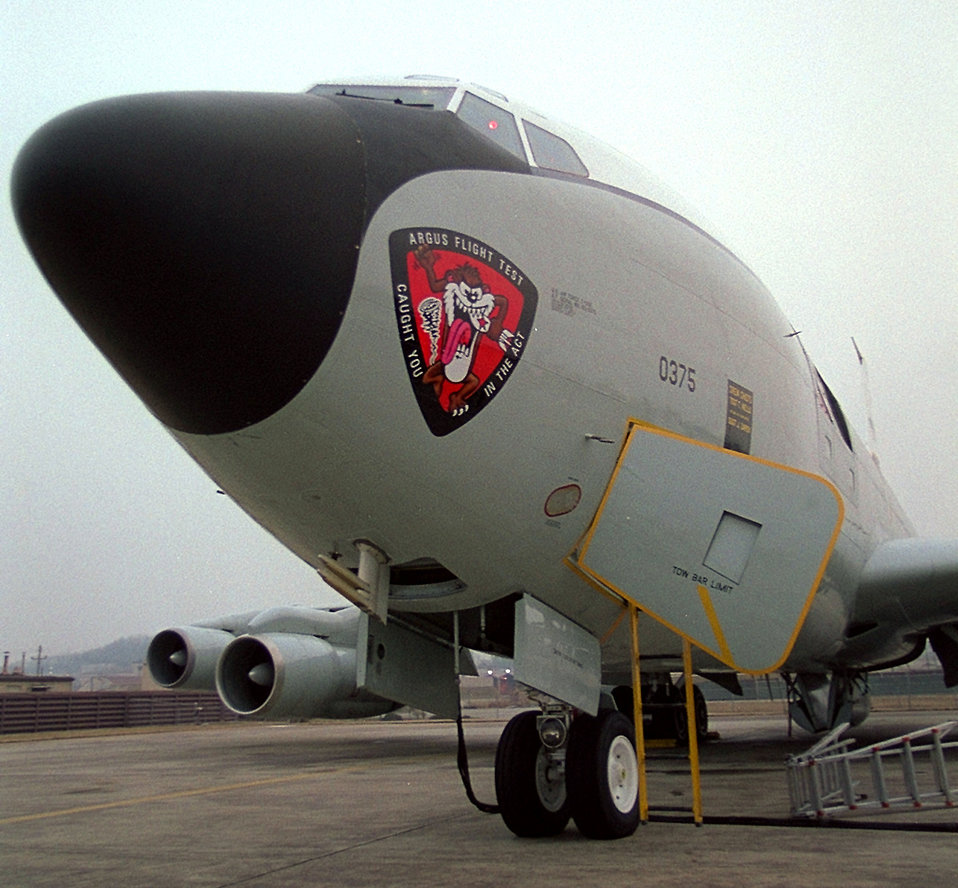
Argus

OSAN AIR BASE, South Korea -- A C-135E Argus belonging to Detachment 2, 452nd Flight Test Squadron, Kirtland Air Force Base, New Mexico waits by the runway here on Feb. 13, 2000. The Argus is used to do testing on optical turbulence that helps the military determine the effectiveness of laser guided munitions. The testing, normally accomplished at Kirtland AFB, is presently being done at here because of the need to deploy to the Asian theater during real world events.